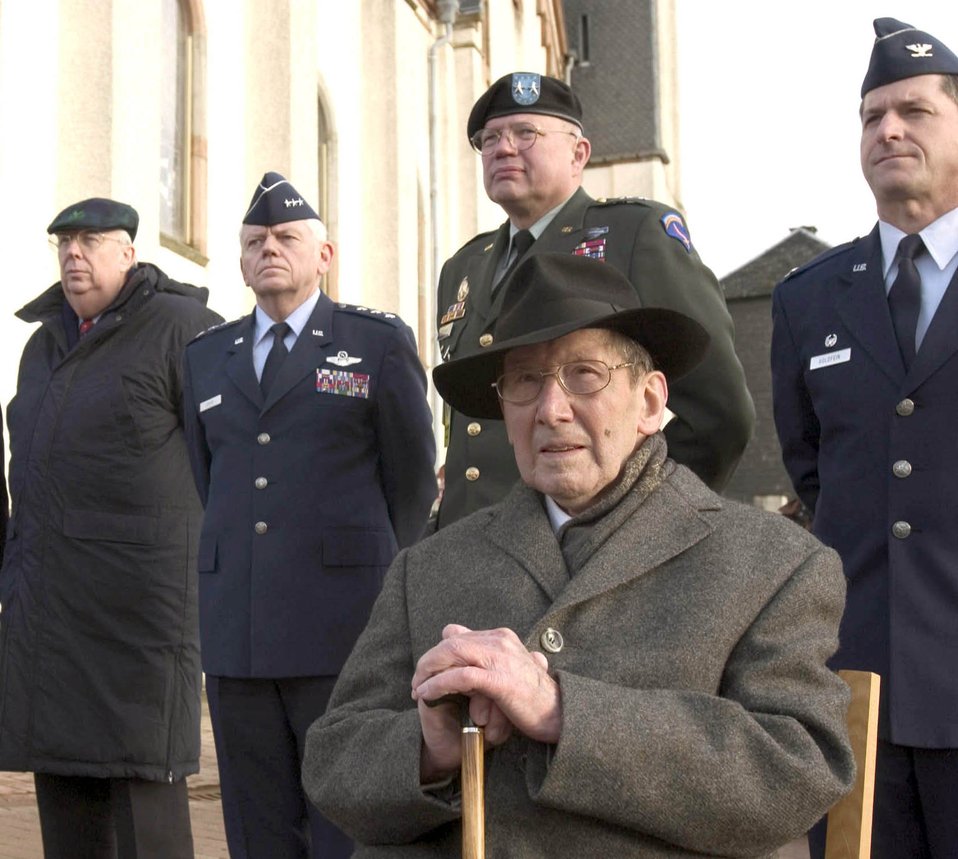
Battle of the Bulge remembered

PERLE, Luxemburg -- Current military leaders join a World War II veteran here during a ceremony commemorating the 60th anniversary of the Battle of the Bulge. People attending included (from left) Air Force Secretary Dr. James G. Roche; Lt. Gen. Arthur Lichte, U.S. Air Forces in Europe vice commander; Army Maj. Gen. David T. Zabecki, 7th Army Reserve commander; and Col. Dave Goldfeinduring, 52nd Fighter Wing commander. Nazi forces were pushed out of Perle by allied forces for a second time once the Battle of the Bulge was complete.